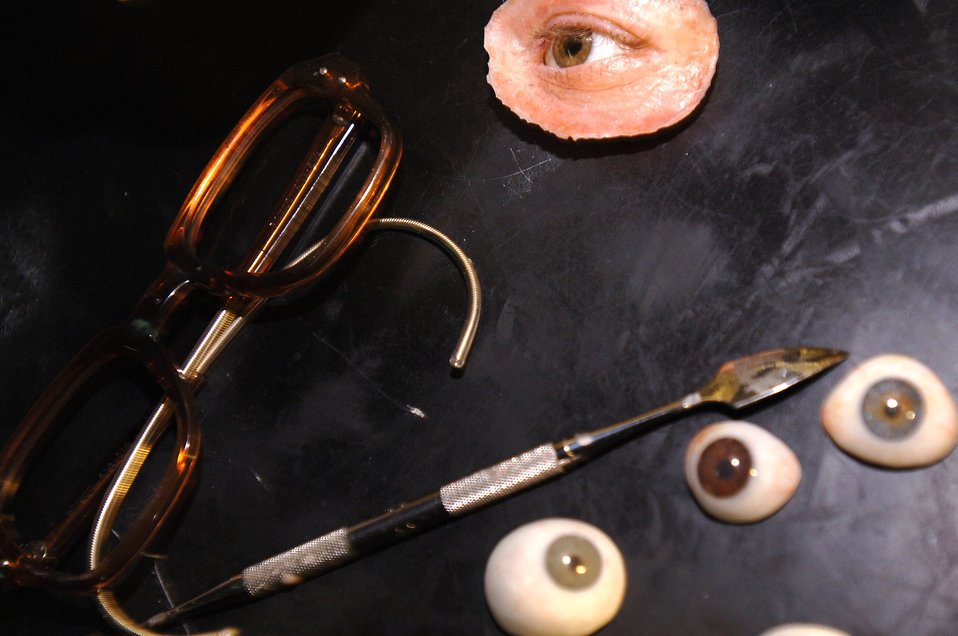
Airman helps injured warriors 'face' the world

Senior Airman Justin Jones creates prosthetic eyes and other facial features. Airman Jones is a maxillofacial prosthetic technician assigned to the 59th Dental Squadron at Lackland Air Force Base, Texas.